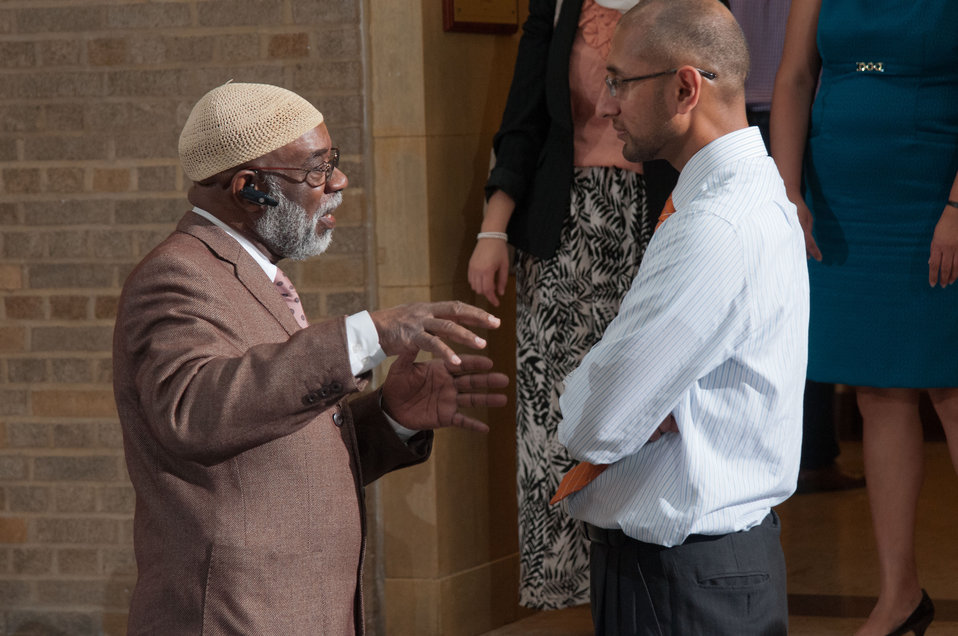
Guests meet one another at the Iftar event, co-sponsored by the Iftar celebration, co-sponsored by the U.S. Department of Agriculture, U.S. Agency for International Development (USAID) and Islamic Relief USA, on Tuesday, August 7, 2012, in the USDA Whitten Building, in Washington, D.C. Ramadan is the month of fasting, intensive prayer, sacrifice and worship for Muslims around the world. Throughout this month, Muslims fast during the day, abstaining from consuming food from dawn to dusk and using this time to purify spiritually. Fasting reminds Muslims of the poverty and hunger suffered by many in the United States and worldwide. It is a connection with those who are hungry not through devotion, but through the many global factors that lead to hunger and famine. Iftar is the meal at which Muslims break their fast at sunset, usually by eating dates, according to the Prophetic tradition.